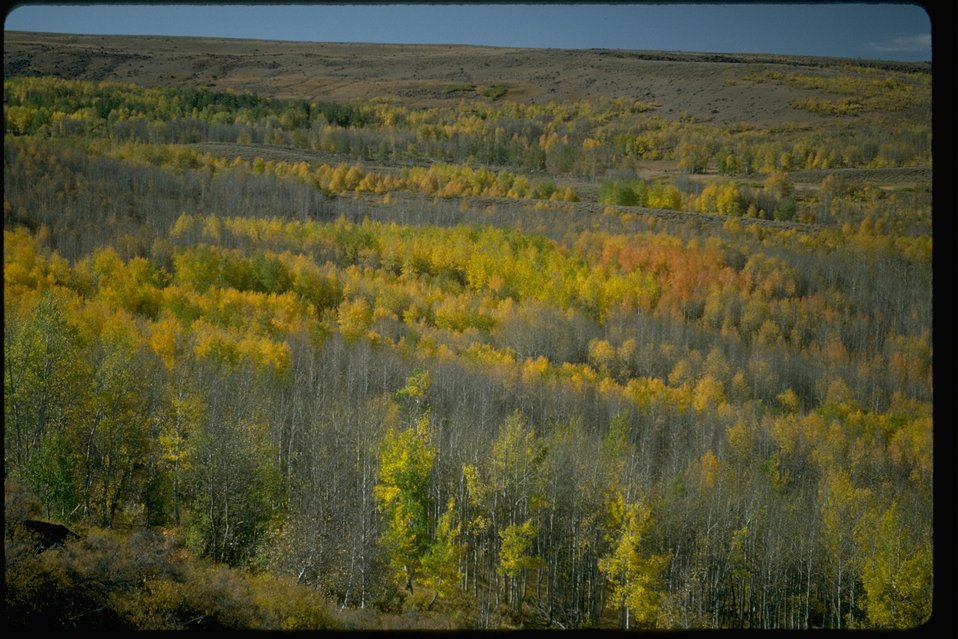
Fall Colors"...Aspen along Fish Creek at Steens Mountain, Oregon.